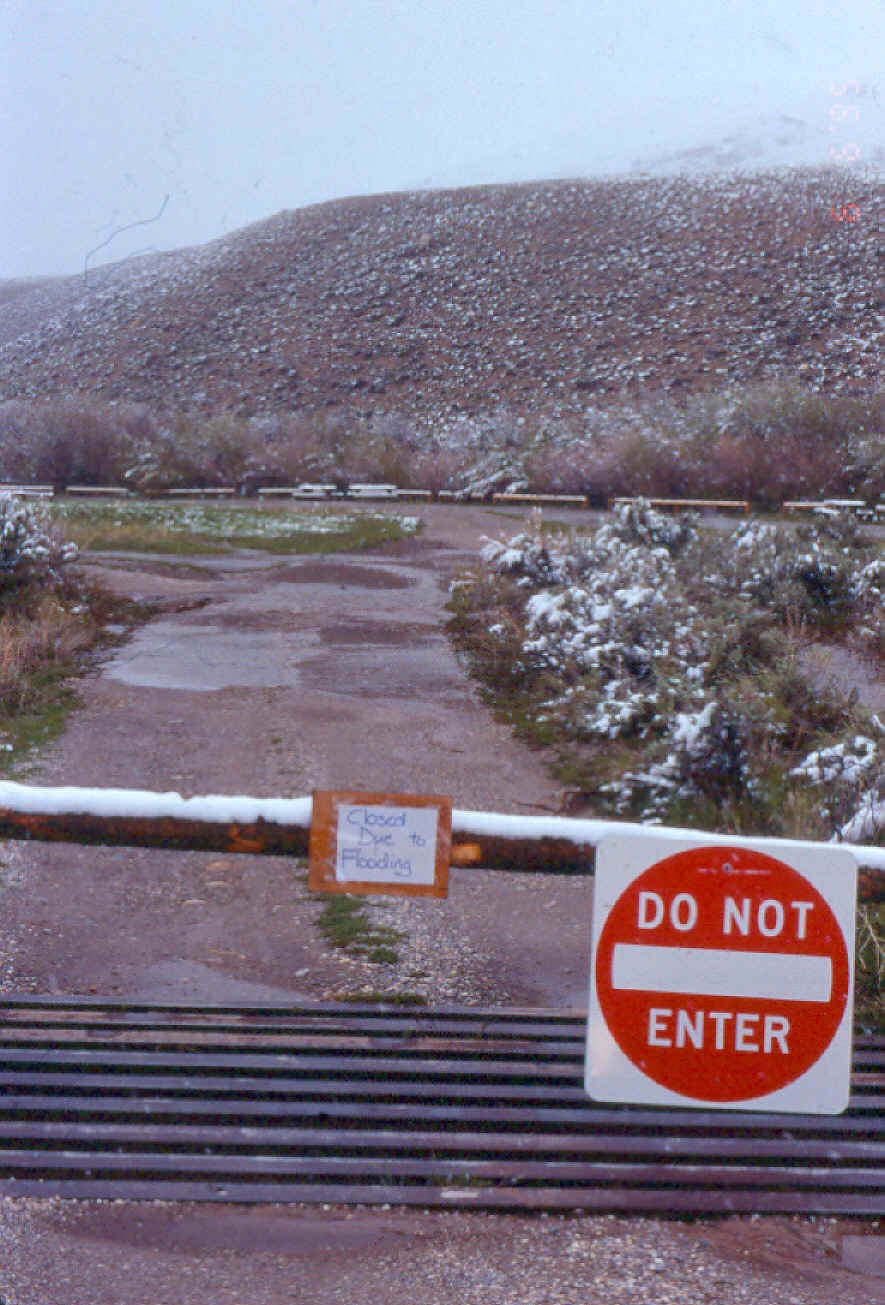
Recreation Site Flooding Sign Salmon Field Office UCSC Upper Columbia Salmon Clearwater District